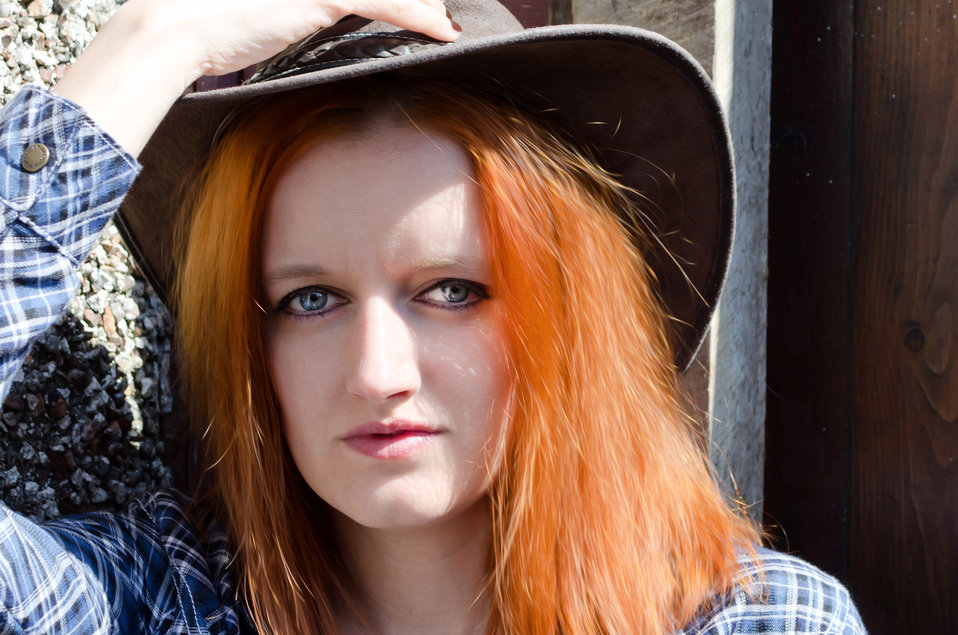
Woman - portrait.